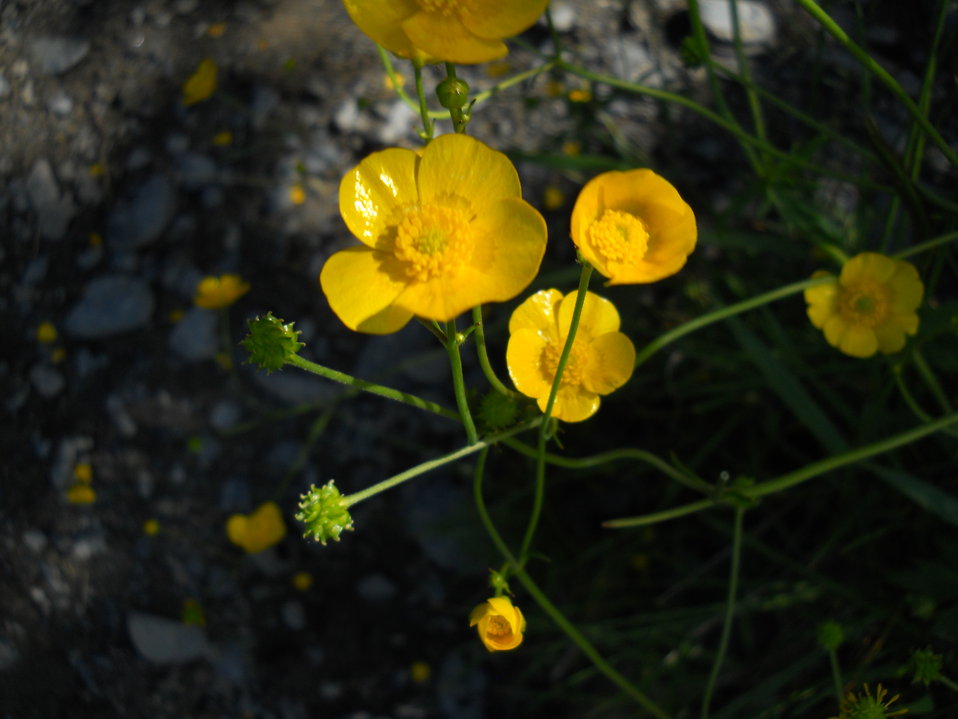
Buttercup

Credit: USFWS
Photo taken by a Salmon Camp participant during a nature photography activity.

Source and Contact: Kodiak National Wildlife Refuge